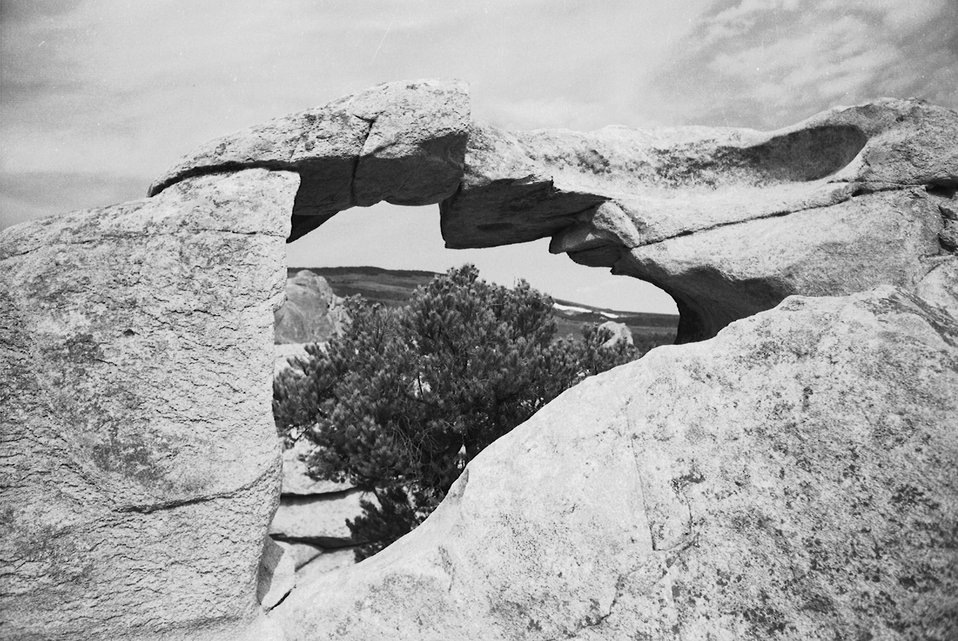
City of Rocks cave Burley Field Office USRD Upper Snake River District